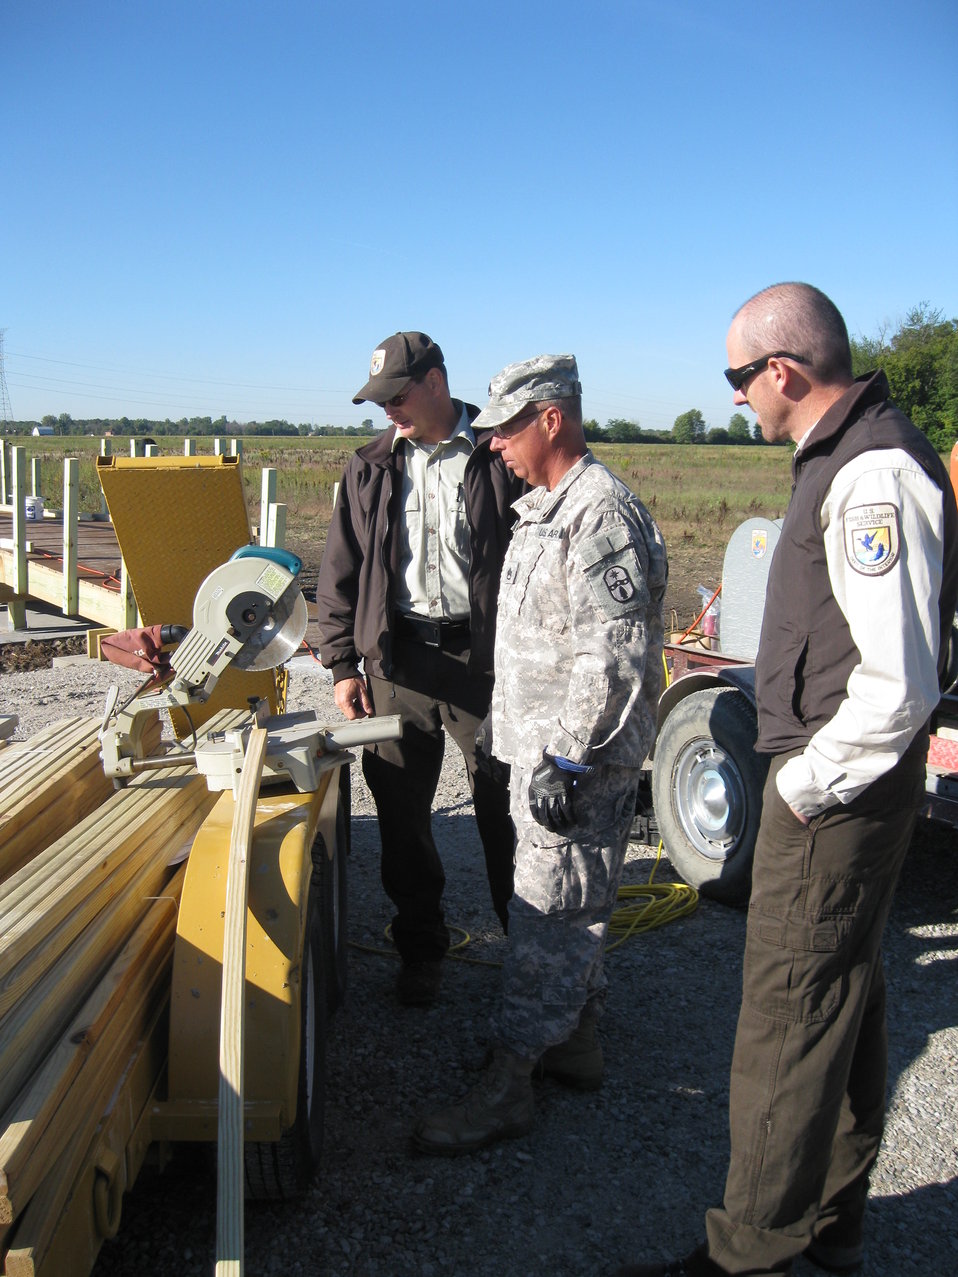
Staying Sharp

Refuge Manager Jason Lewis watches Warrior in Transition Volunteer Randy Aspacher Refuge Maintenance Worker and disabled veteran Kevin Bernheisel, saw wood for the Boss Unit Shorebird Observation Platform.